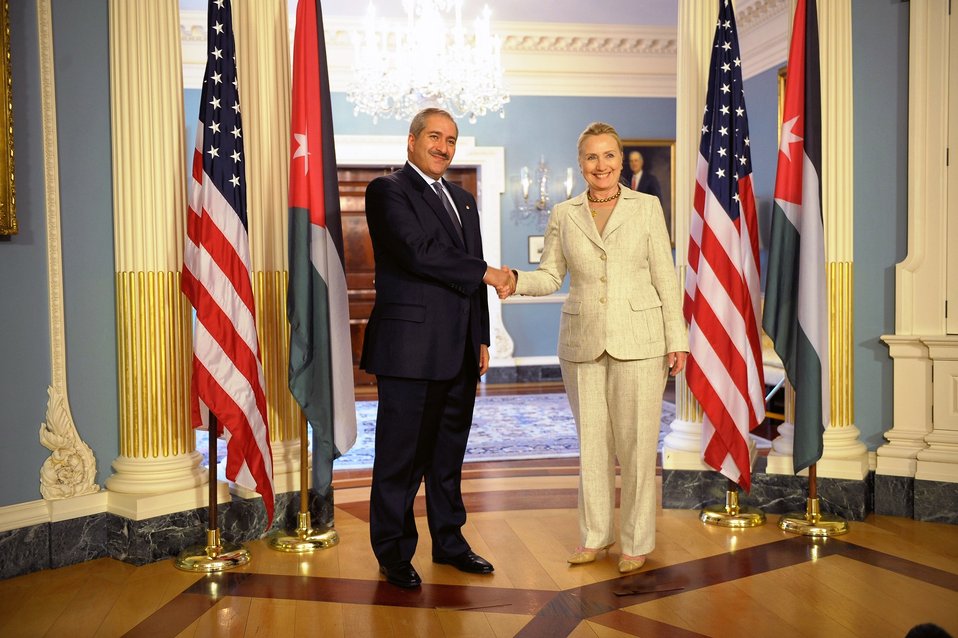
Secretary Clinton Meets With Jordanian Foreign Minister Judeh

U.S. Secretary of State Hillary Rodham Clinton meets with Jordanian Foreign Minister Nasser Judeh at the U.S. Department of State in Washington, D.C., on June 11, 2012.